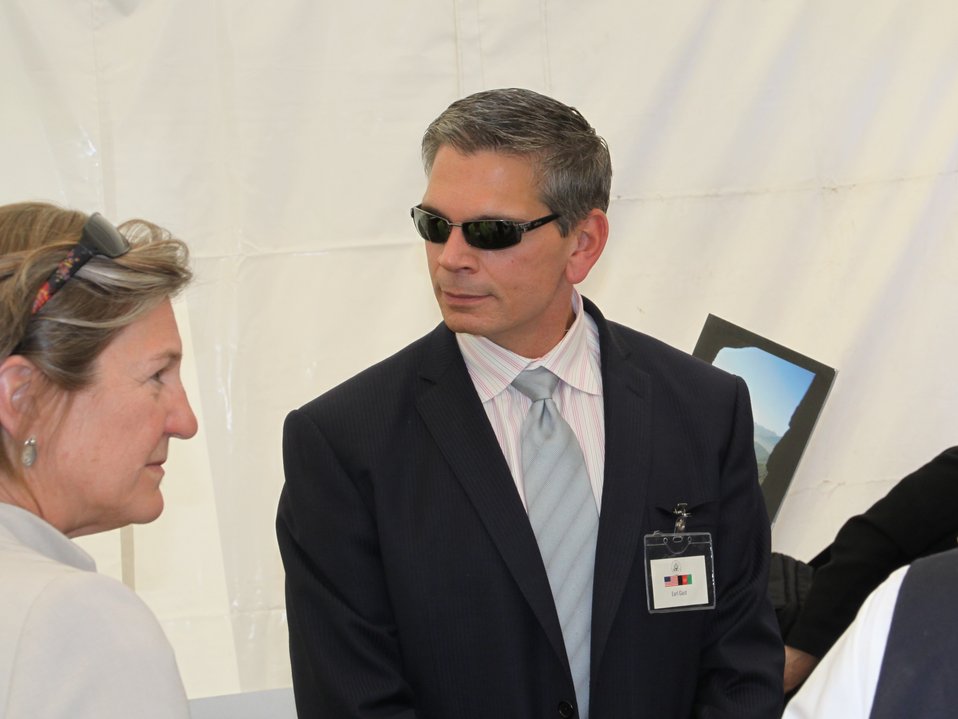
Kabul Official July 4th Celebration